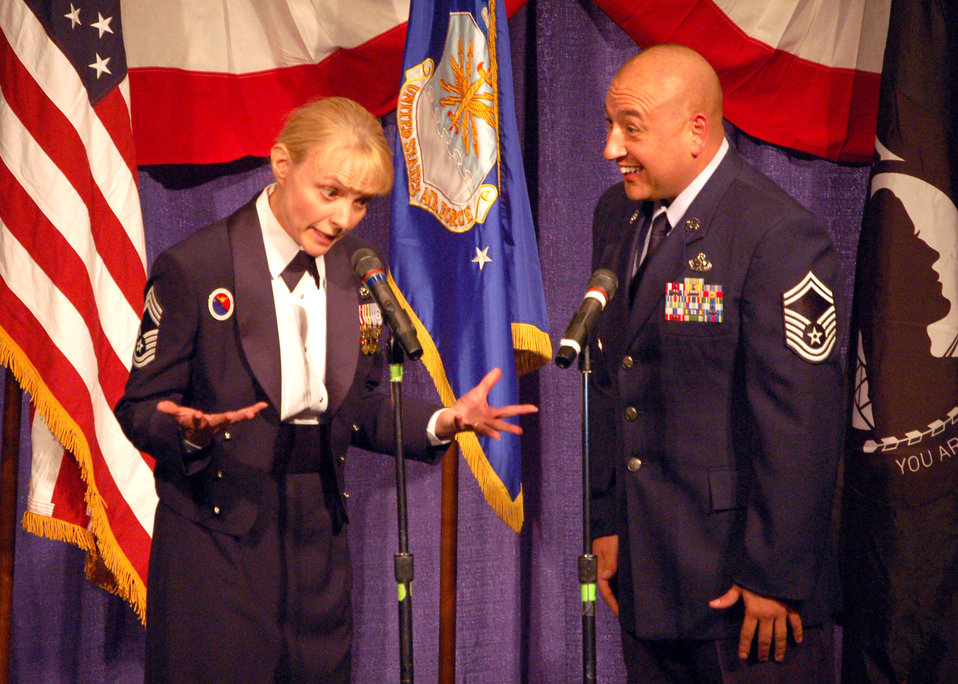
Airmen recognize impact of enlisted heritage

Chief Master Sgt. Pamela Derrow and Senior Master Sgt. Barraza act out a skit while introducing the period of service of the 12th Chief Master Sergeant of the Air Force Eric Benken's tenure during the Senior Enlisted Leaders Conference Heritage Dinner July 26 in Montgomery, Ala. Chief Derrow is the commandant of the Air Force Senior NCO Academy.